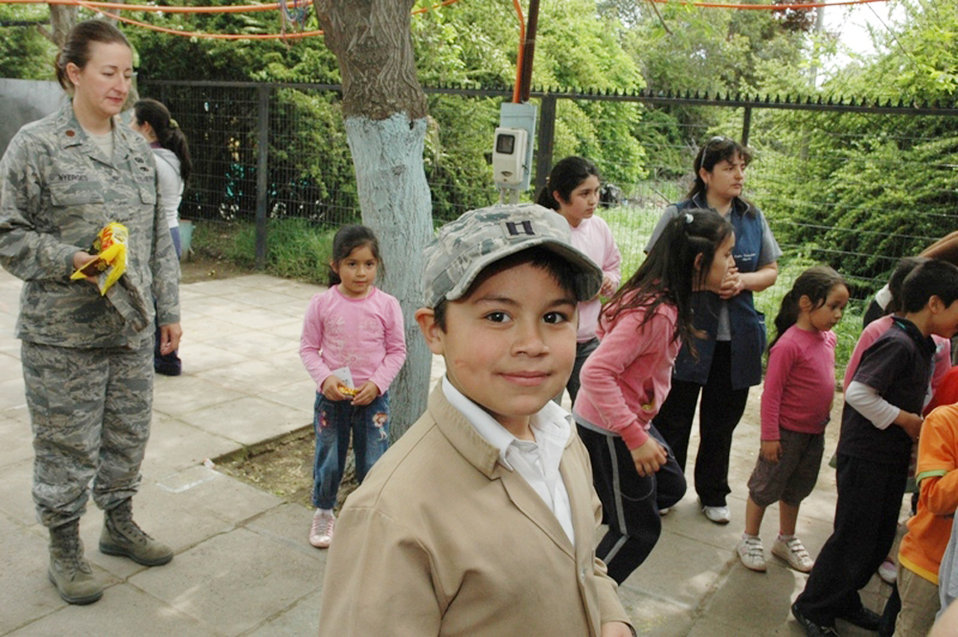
Airmen spend day with Chilean children

Children from the Angels Community Center gather in the school's courtyard to play with Airmen during a surprise visit Oct. 13, 2009, in Santiago, Chile. Airmen were in Santiago conducting a subject matter exchange with the Chilean air force as part of Air Forces Southern's ongoing Cooperation Team-One initiative and decided to use their first day in country to sponsor a group of at-risk children during a trip to a local science museum.